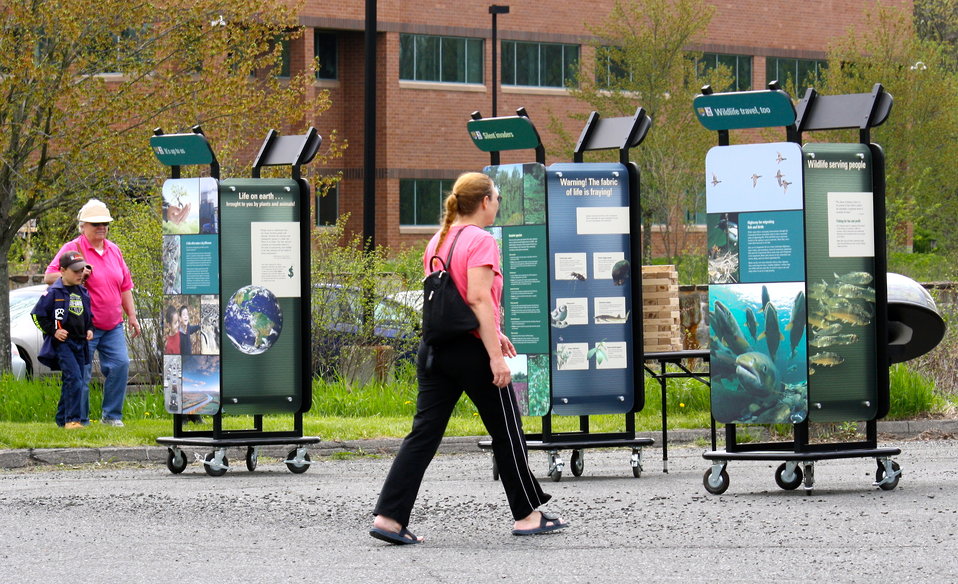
Watershed on Wheels displays

Interactive displays add to the traveling refuge on wheels.